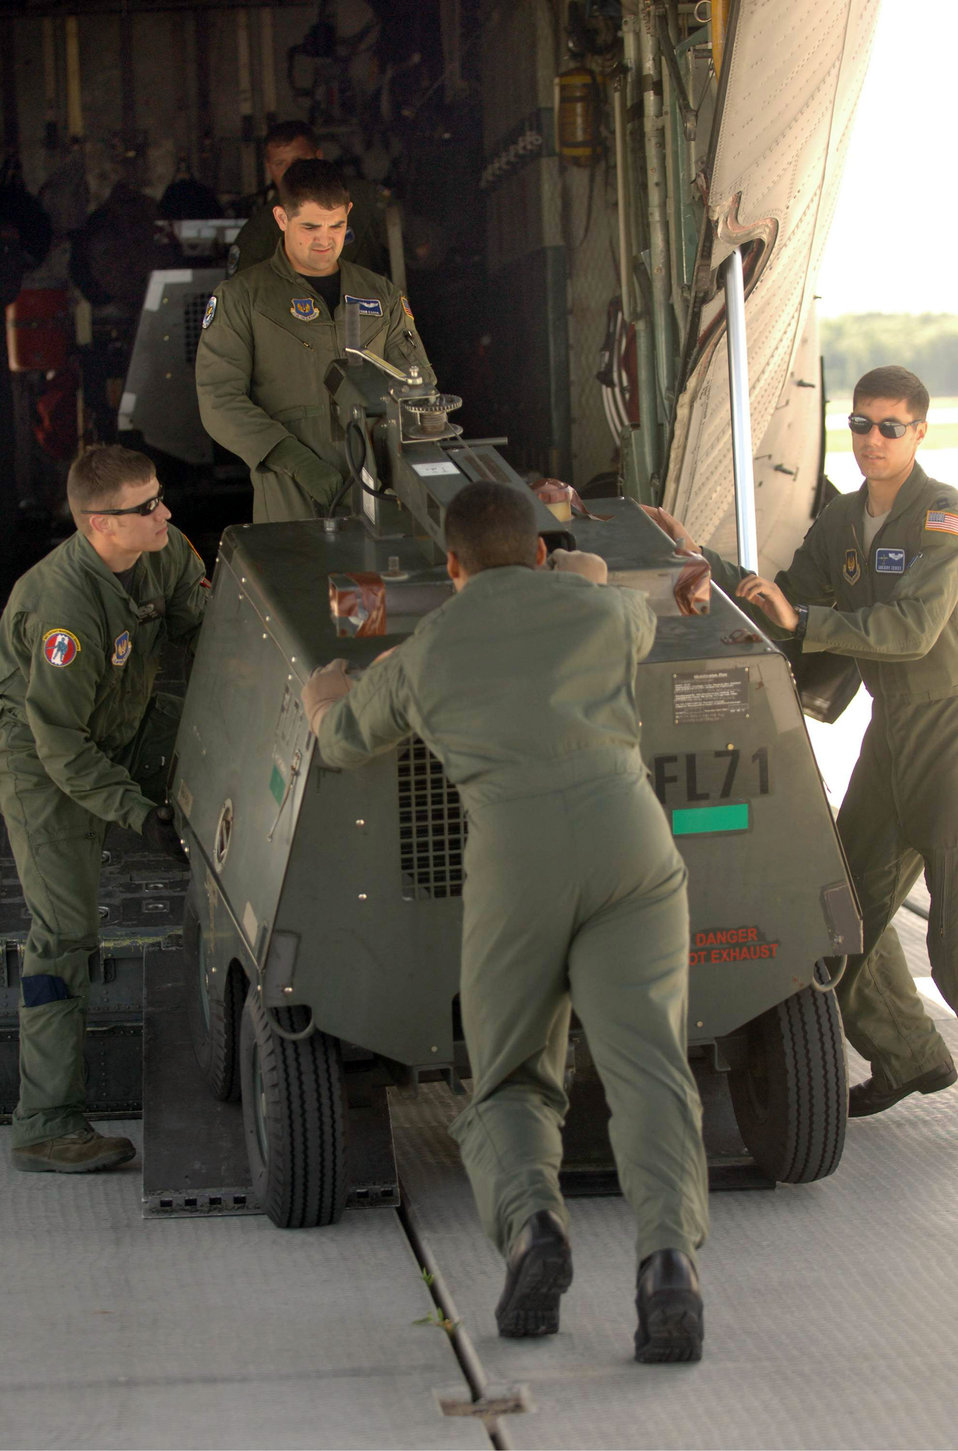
Airmen provide presidential support in Moscow

Airman 1st Class Jason Ricke (left) prepares to unload one of 10 portable light carts from a C-130 Hercules with assistance from (clockwise from top) Capt. Jon Esses, Capt. Greg Zency and Staff Sgt. Edward Lewis July 3 at Moscow's Vnukovo International Airport in Russia. The aircraft and crew are assigned to 37th Airlift Squadron and delivered the equipment in support of President Barack Obama's visit to Russia. Airman Ricke is an aircraft maintenance technician, Captain Esses is a C-130 co-pilot, Captain Zency is a C-130 navigator, and Sergeant Lewis is a flight engineer.